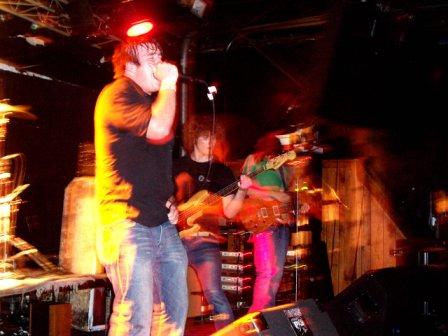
Valencia performing on July 24, 2005 at The Berkeley Cafe in Raleigh, NC.